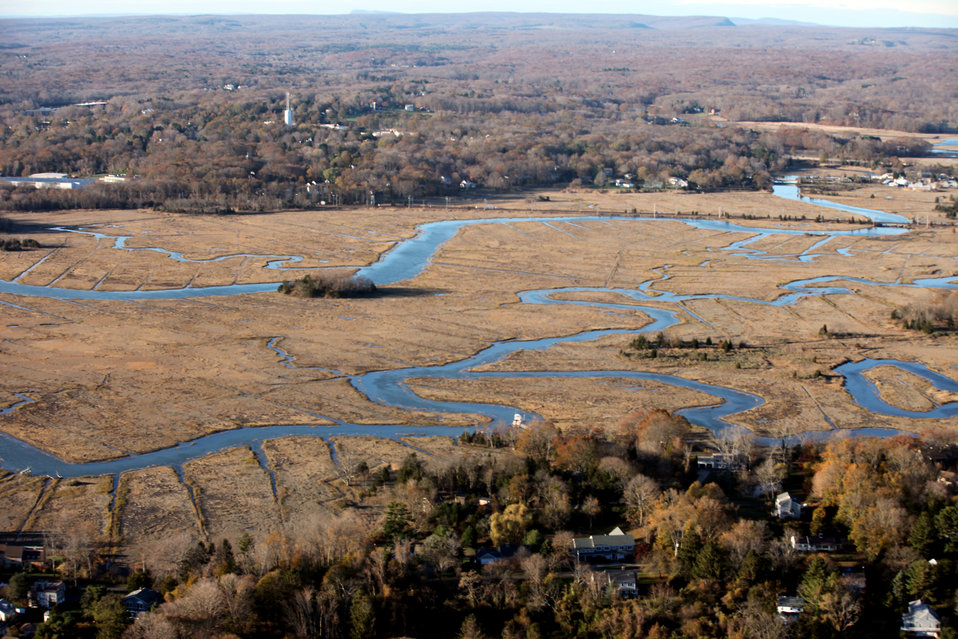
Photo of the Week - Stewart B. McKinney National Wildlife Refuge (CT)

Photo of the Week - 11/12/2012

Aerial view of Guilford Wetlands an area that the U.S. Fish and Wildlife Service is involved in a conservation effort near the refuge. A pleasant site while surveying hurricane damage.